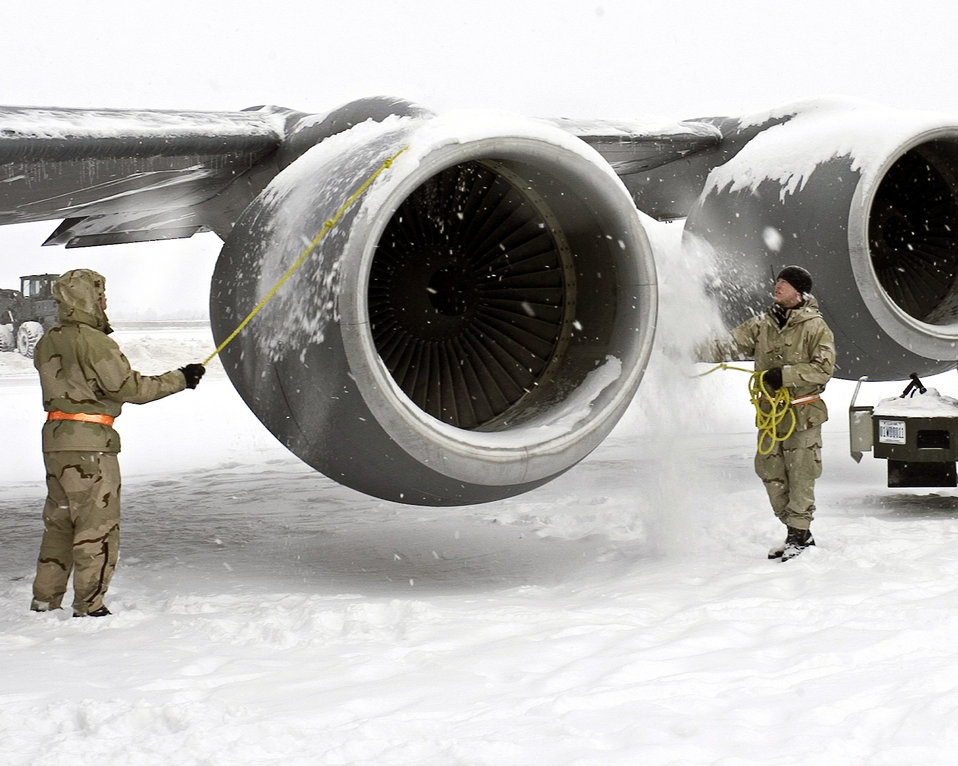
Snowbody knows

MANAS AIR BASE, Kyrgyzstan -- Staff Sgts. Michael Coakley and Charles McDaniel clear snow from the engine of a KC-135 Stratotanker. The base here received 14 inches of snow in 36 hours. The Airmen are crew chiefs assigned to the 376th Expeditionary Aircraft Maintenance Squadron.